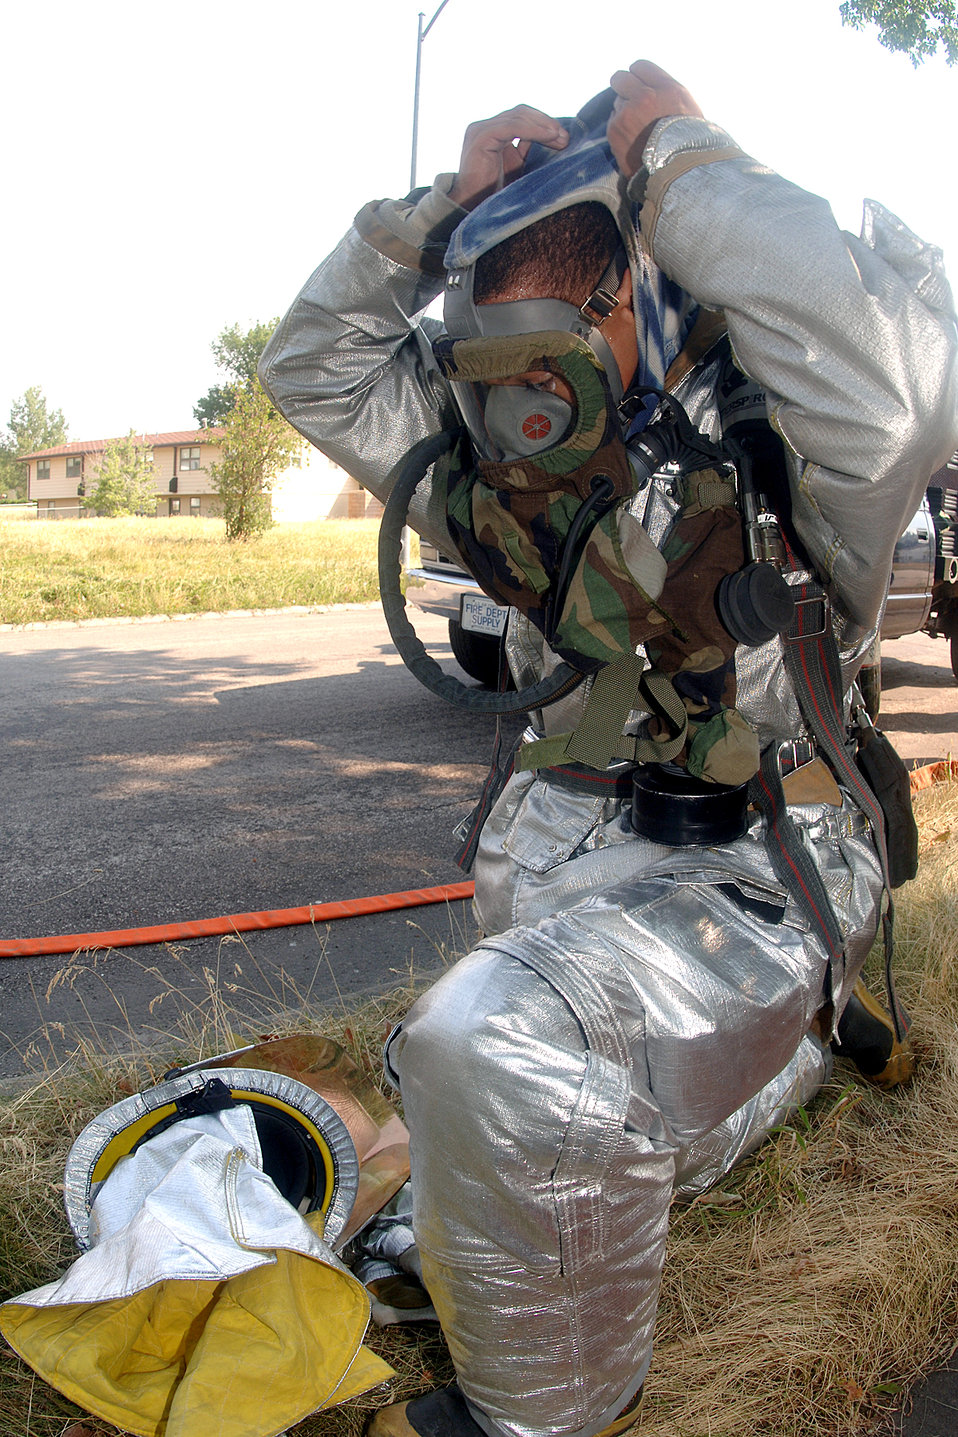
Fired up

Senior Airman Kevin Ferguson removes his mask after a simulated fire at Ellsworth Air Force Base, S.D., on July 19. The scenario was part of an operational readiness inspection. Airman Ferguson is with the 28th Civil Engineer Squadron.